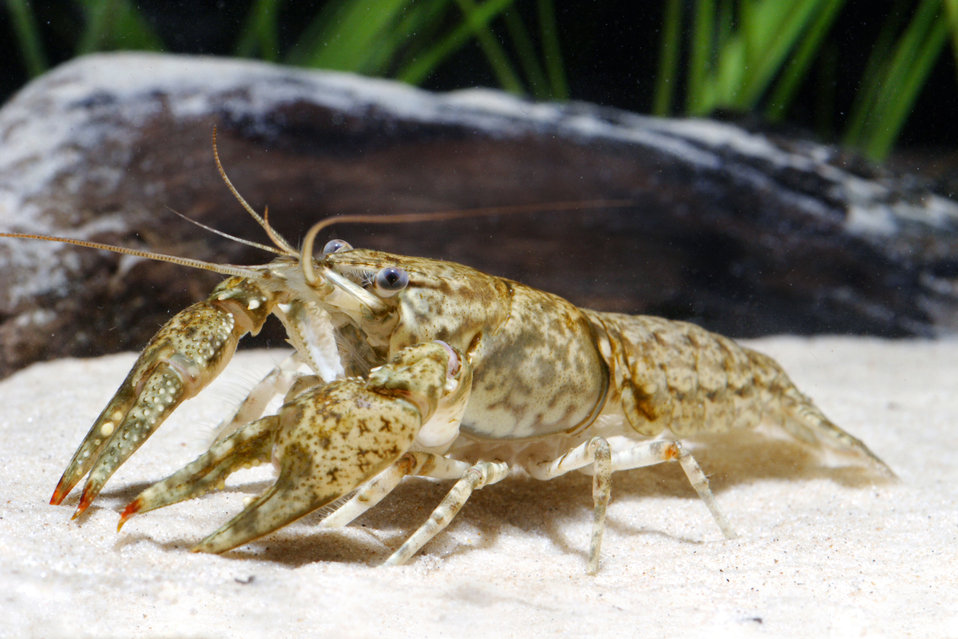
Crayfish3

Crayfish, like this Orconectes chickasawae are freshwater crustaceans, and live in rivers and streams.